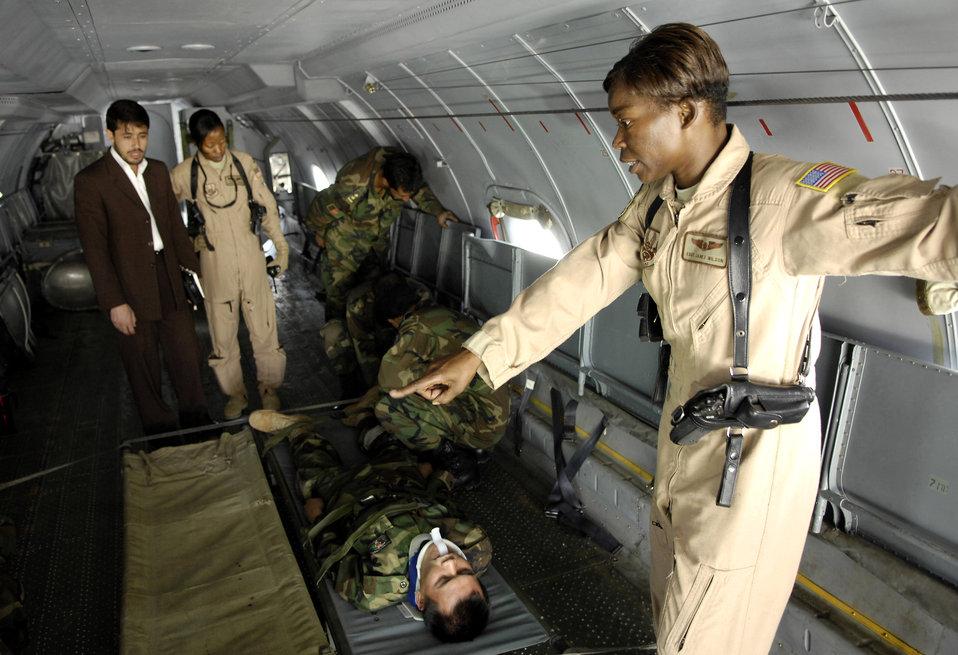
Making a point

Tech. Sgt. Janet Wilson observes a medical evacuation team as they load a patient onto an AN-32 cargo plane during an Oct. 20 training exercise at Kabul International Airport, Afghanistan. Sergeant Wilson is an Afghan national army air corps medical mentor with the air corps advisers group here.